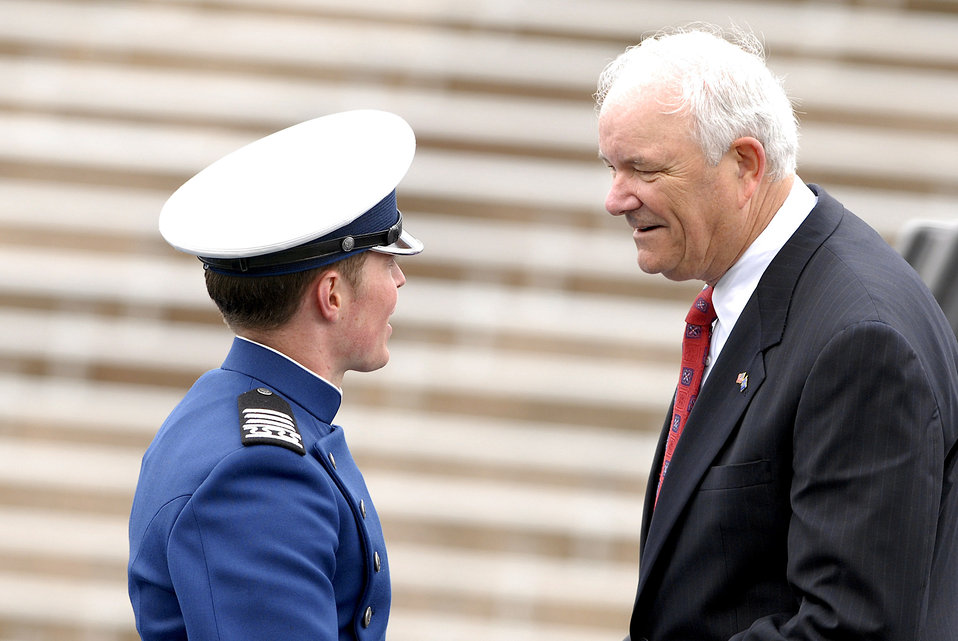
The 50th Academy class graduates

Secretary of the Air Force Michael W. Wynne congratulates newly commissioned 2nd Lt. Andrew Derwae during the U.S. Air Force Academy Class of 2008 graduation ceremony at Falcon Stadium May 28.